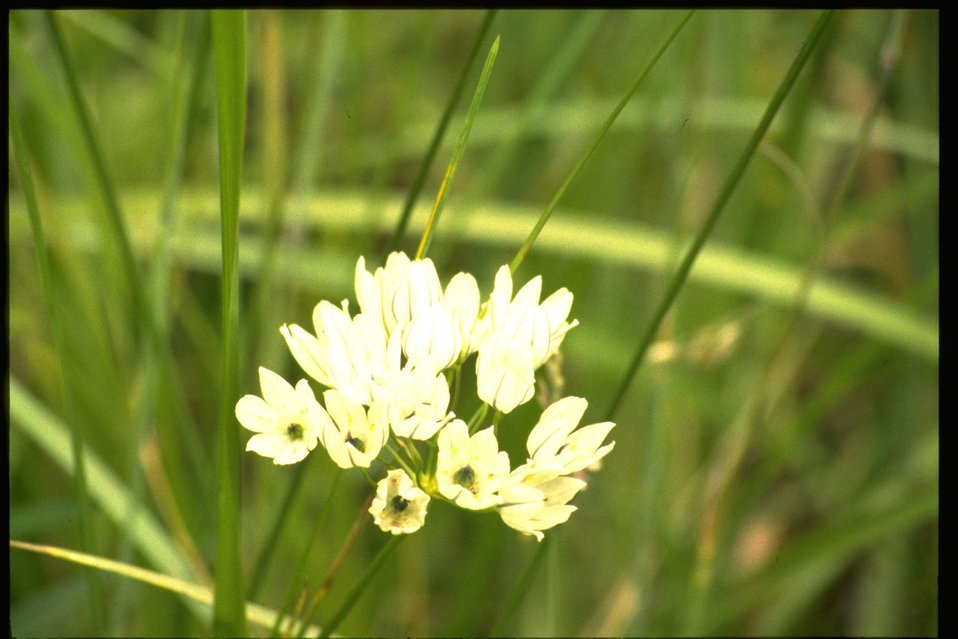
Medium shot of Brodiaea hyacinthina.